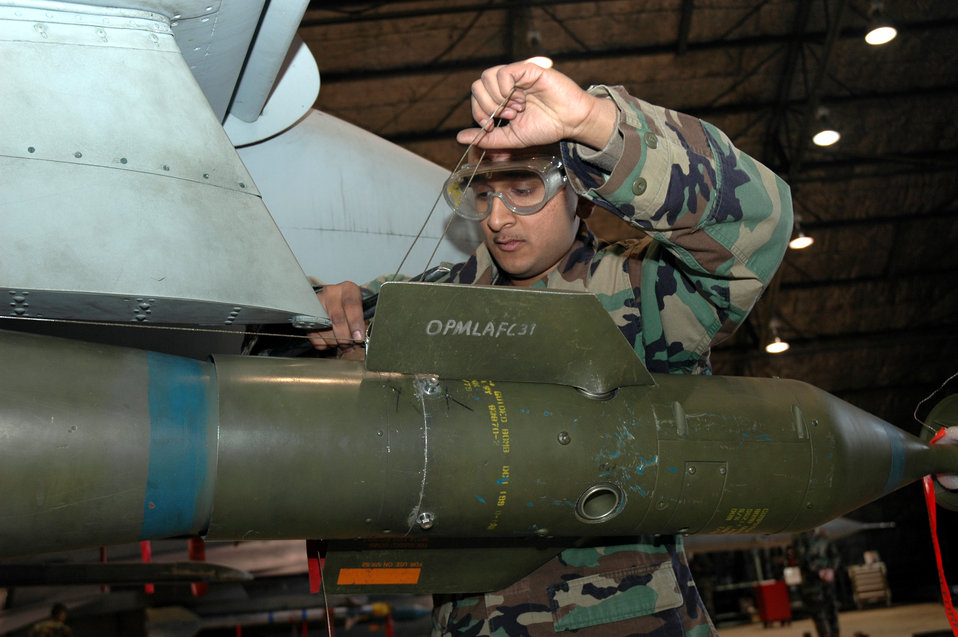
A lot of loading

OSAN AIR BASE, South Korea -- Senior Airman Nilesh Chand wires a bomb on an A-10 Thunderbolt II here recently. He is assigned to the 51st Aircraft Maintenance Squadron.